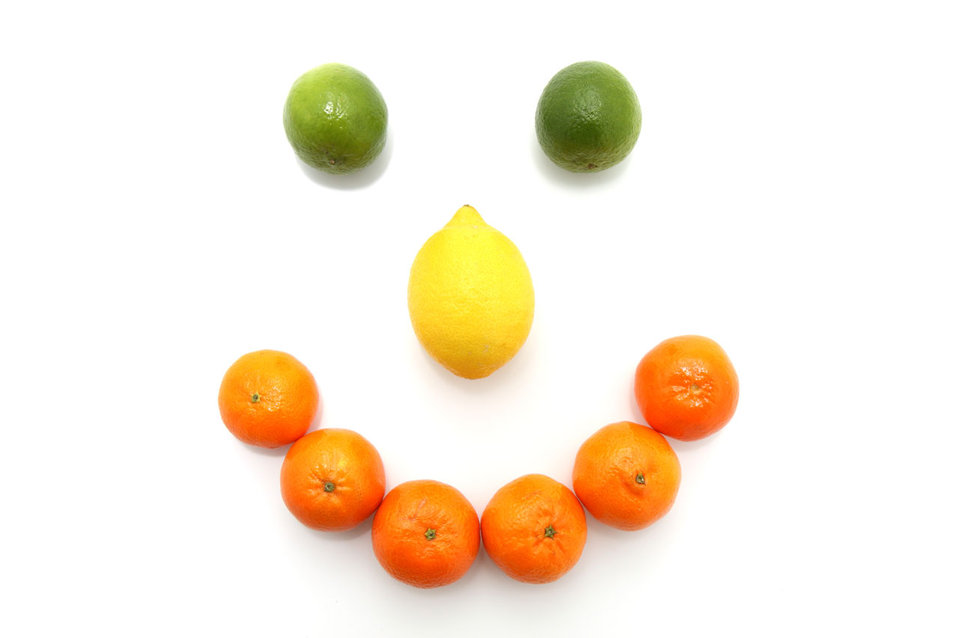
Fruit smile

A smile made from citrus fruit.